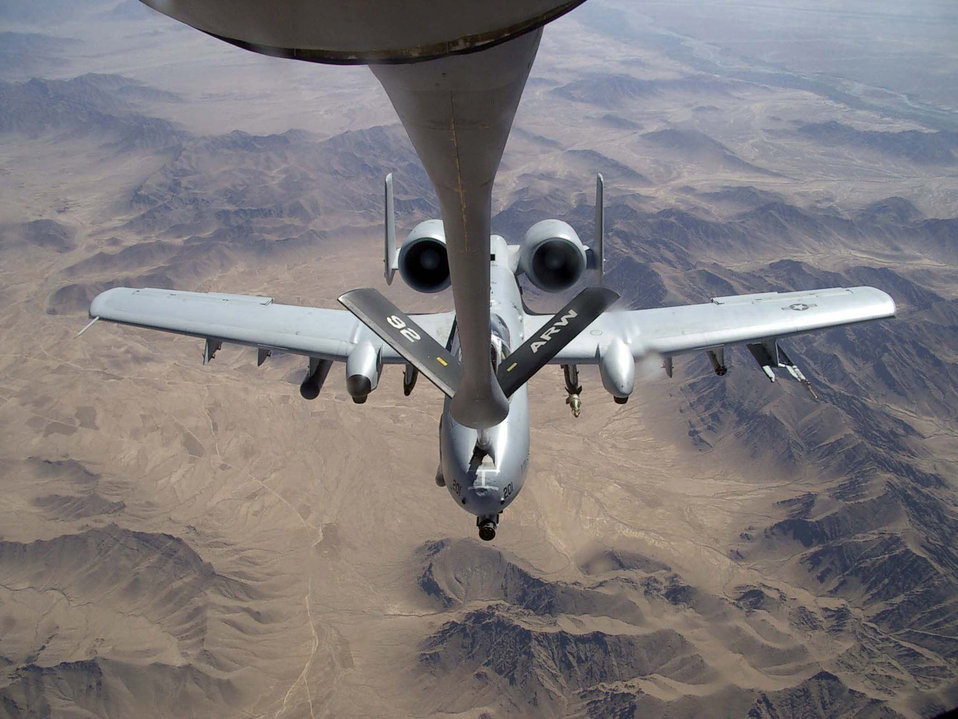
New tanker needed

An A-10 Thunderbolt II takes on gas from a KC-135 Stratotanker over Afghanistan. The newer, more capable KC-45A aircraft will soon replace the aging KC-135 aircraft.